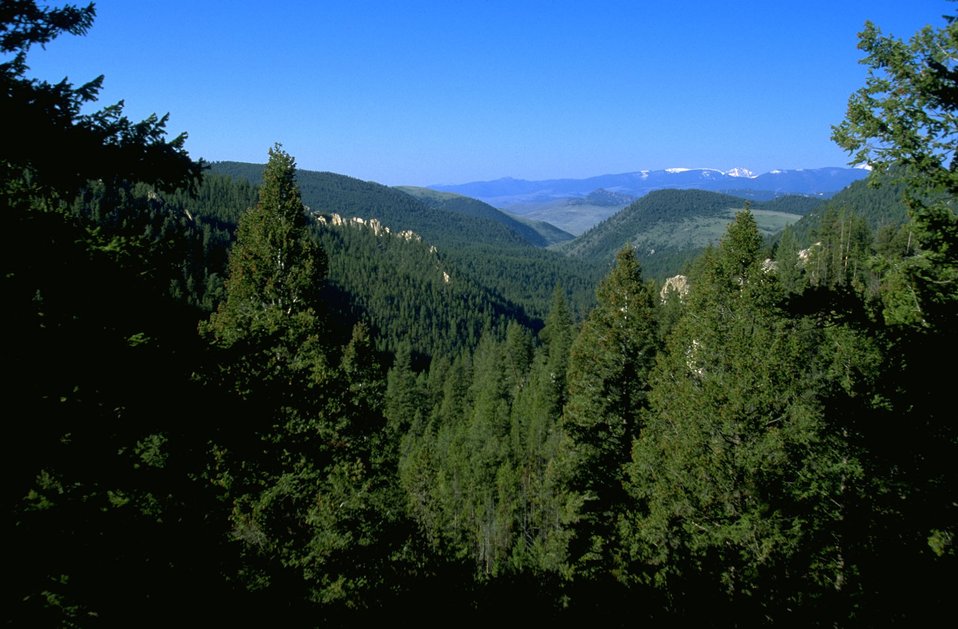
Trees, blue sky and mountains in the Humbug Spires Wilderness Study Area